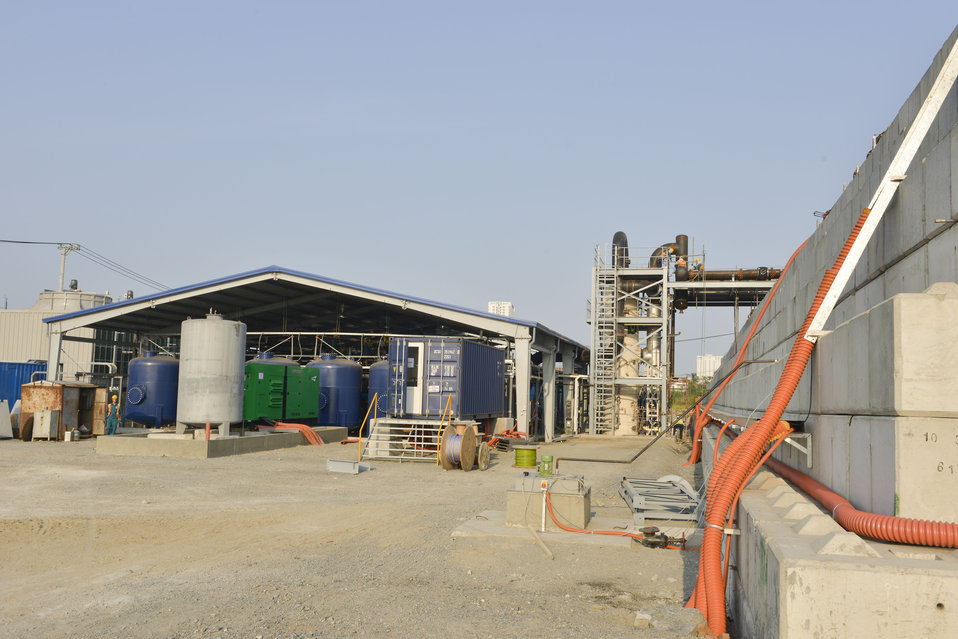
The liquid and vapor treatment plant/system constructucted north of the containment structure.

March 24, 2014.